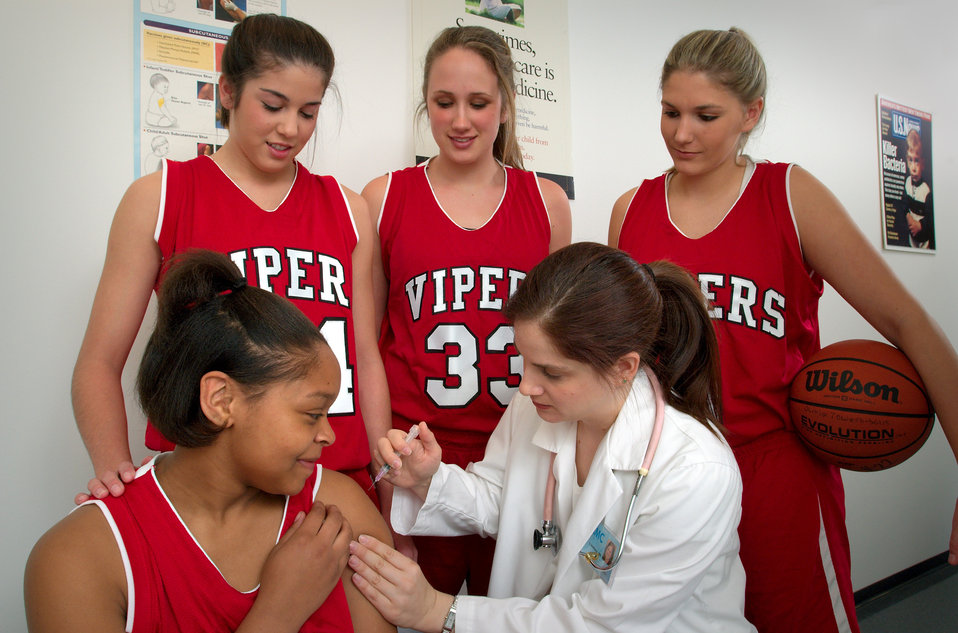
This photograph showed a nurse in the process of administering a vaccination into the left shoulder muscle of a 15-year old female basketball player, while three of her teammates observed.